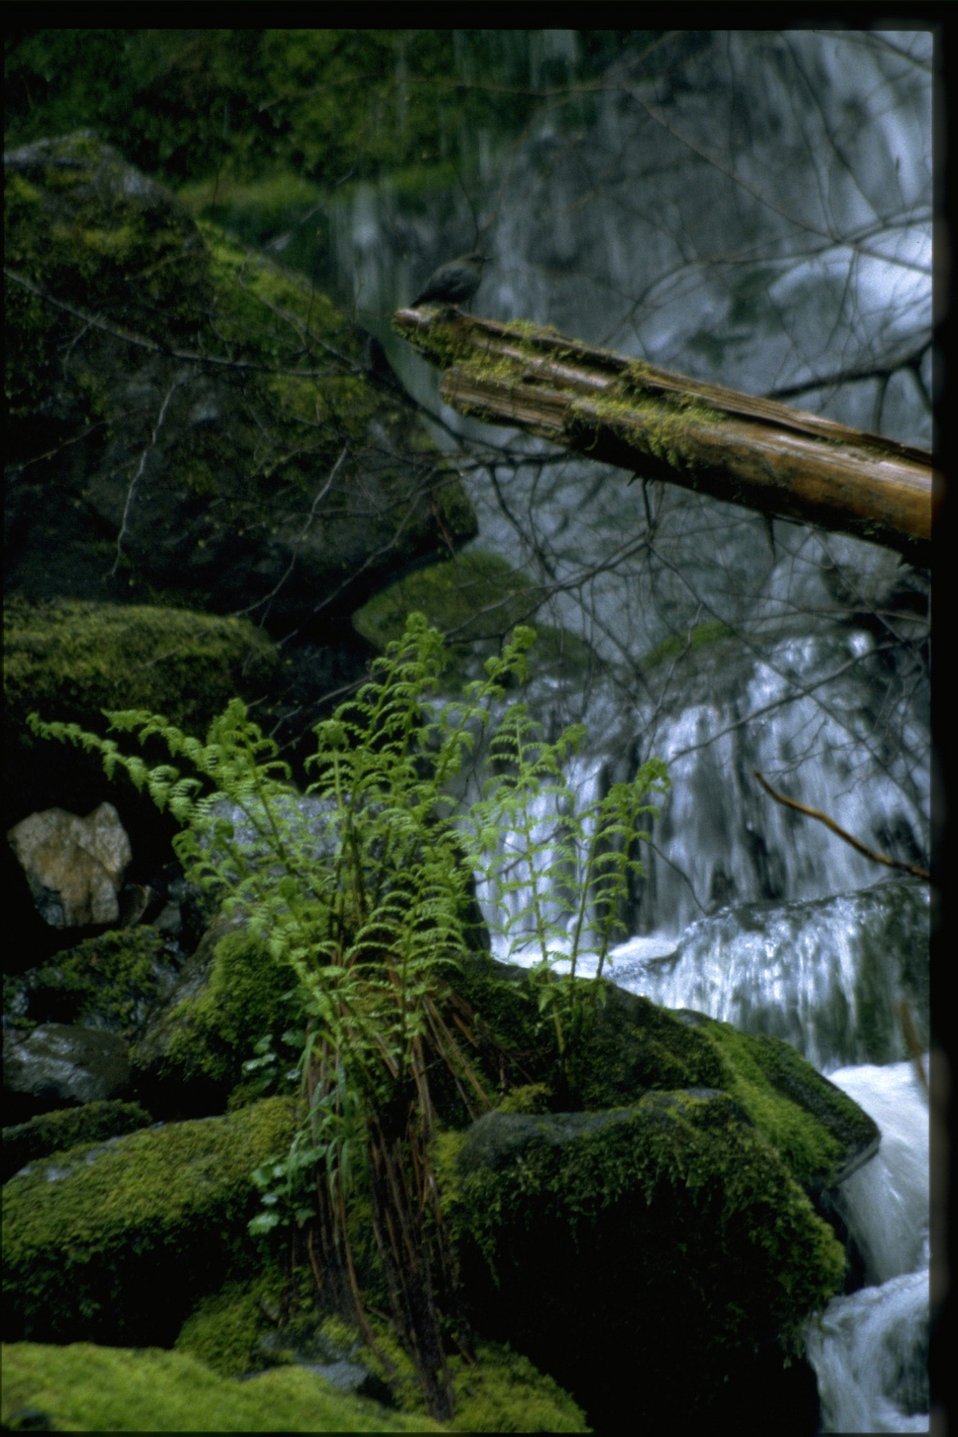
Swiftwater stream.